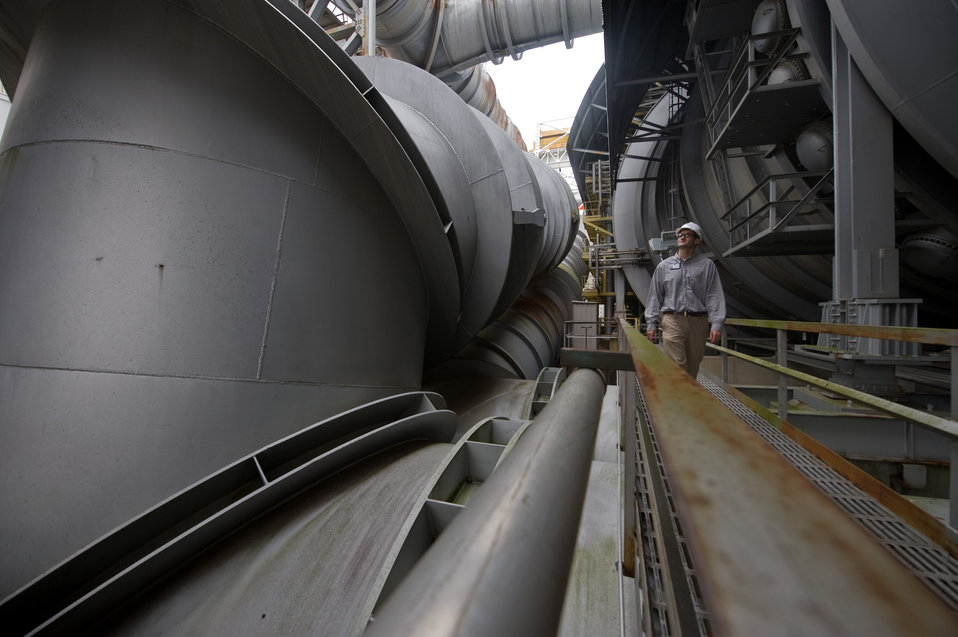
Blow Hard

Dr. Richard Roberts conducts a site visit near the outside of the diffuser section of the16-foot supersonic wind tunnel (16S) at Arnold Air Force Base, Tenn. On Oct. 6, 2009. Dr. Roberts is the Project Manager of the von Karman Gas Dynamics Facility (VKF) and the Propulsion Wind Tunnel Facility (PWT), located at Arnold Engineering Development Center (AEDC). There are three wind tunnels. They use two closed-circuit wind tunnels (one to simulate transonic speeds and the other supersonic), with 16-foot-square test sections, are also used for conventional aerodynamic tests. Air that has been pushed through the section seen has passed through progressively narrowing tunnel sections and 90-degree turns that lead to the test section. The PWT test section is as tall as a two-story house and as heavy as a railroad locomotive. The inside of the test section is 16' tall. They are positioned just behind a 40 feet long variable venturi, side walls that have hydraulic pistons to push the two flexible 16 foot tall by 40 foot long wall toward each other or apart to adjust the air speed and maintain smooth air flow into the test section. The facility is devoted to aerodynamic and propulsion integration testing of large-scale aircraft models. Some of the most powerful electric motors ever built are located in the PWT facility.